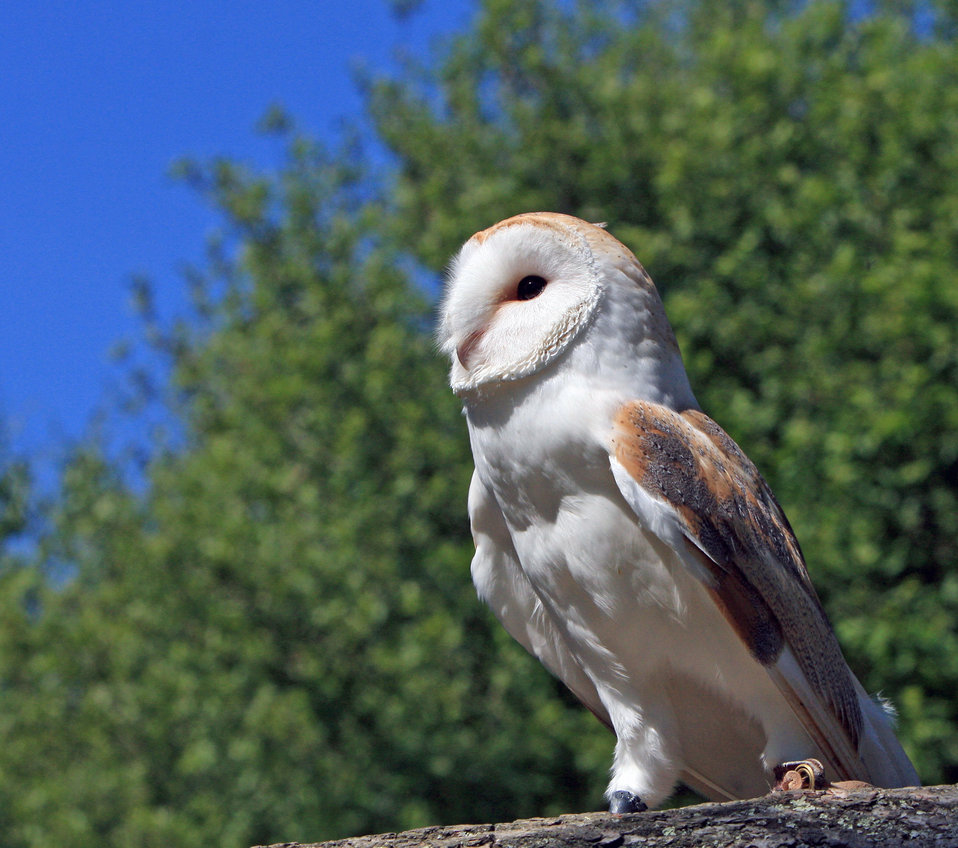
Barn owl

Beautiful photo portrait of a barn owl against a blue sky.